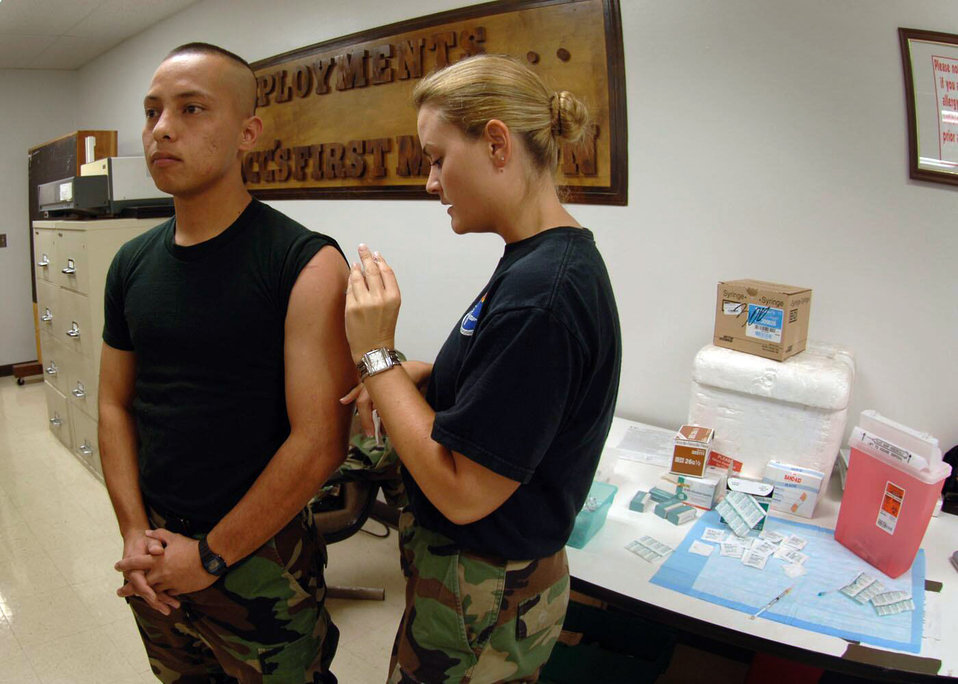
Lining up, moving out

DAVIS-MONTHAN AIR FORCE BASE, Ariz. -- Staff Sgt. Jessica Despot administers a typhoid shot to Airman 1st Class Nicolas Paulino as part of his predeployment processing for an upcoming air and space expeditionary force cycle. Sergeant Despot is an immunization technician with the 355th Aerospace Medicine Squadron, and Airman Paulino is assigned to the 355th Services Squadron.